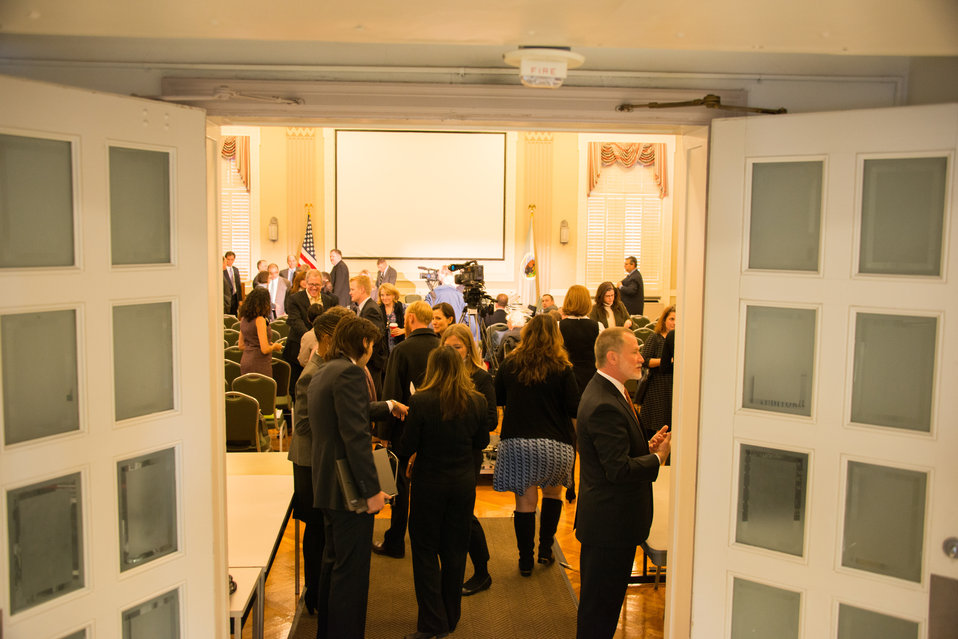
Public Meeting of Advisory Council on Wildlife Trafficking